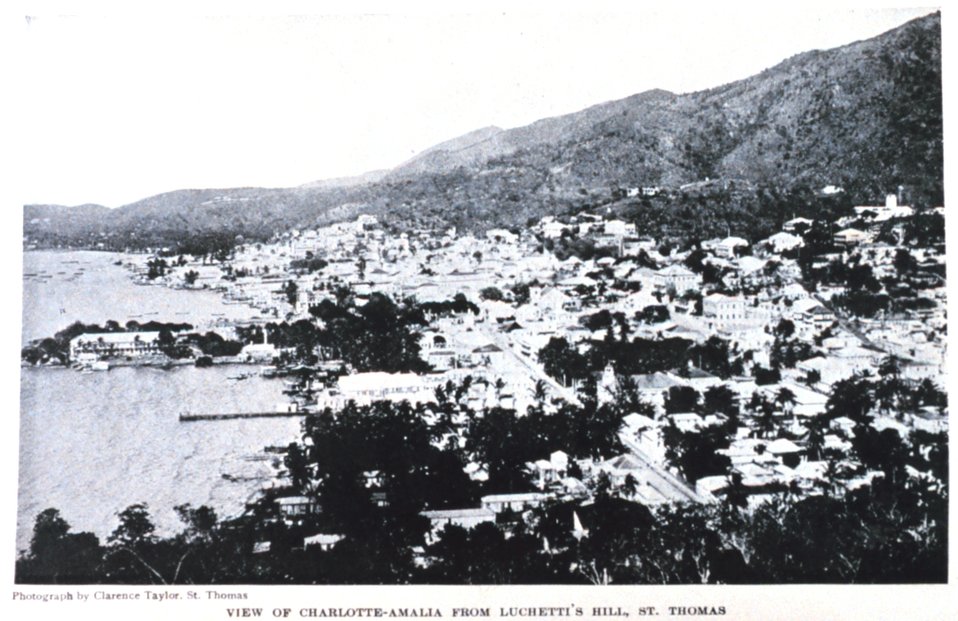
'View of Charlotte-Amalia from Luchetti's Hill.' In: 'The Virgin Islands Our New Possessions and the British Islands', by Theodoor De Booy and John T. Faris, 1918. J. B. Lippincott and Company, Philadelphia. Frontispiece. Library Call Number C/hc100 V81 B.